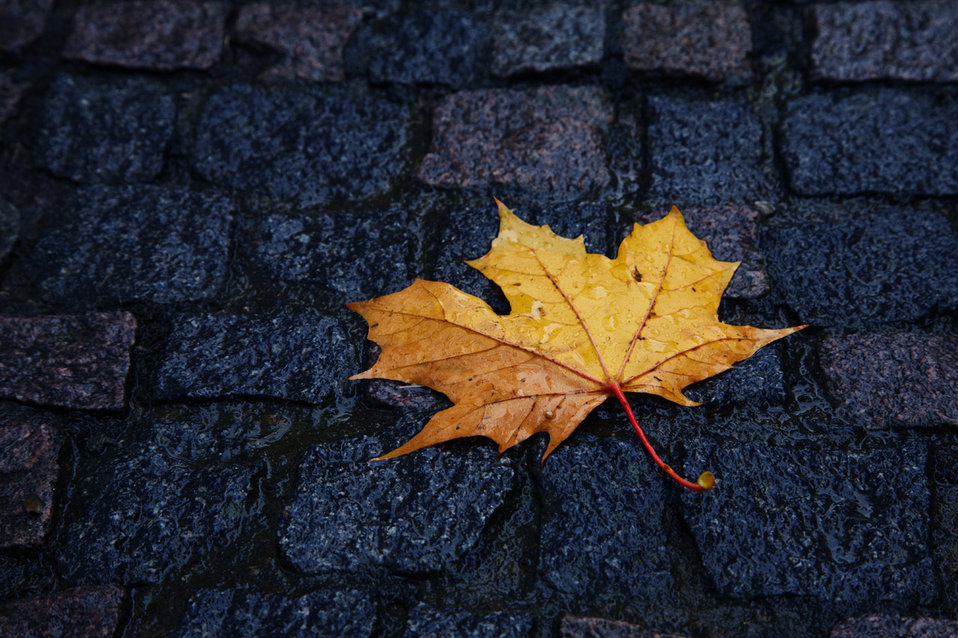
Single wet leaf in autumn

Single yellow wet maple leaf on the cobblestone floor in autumn.